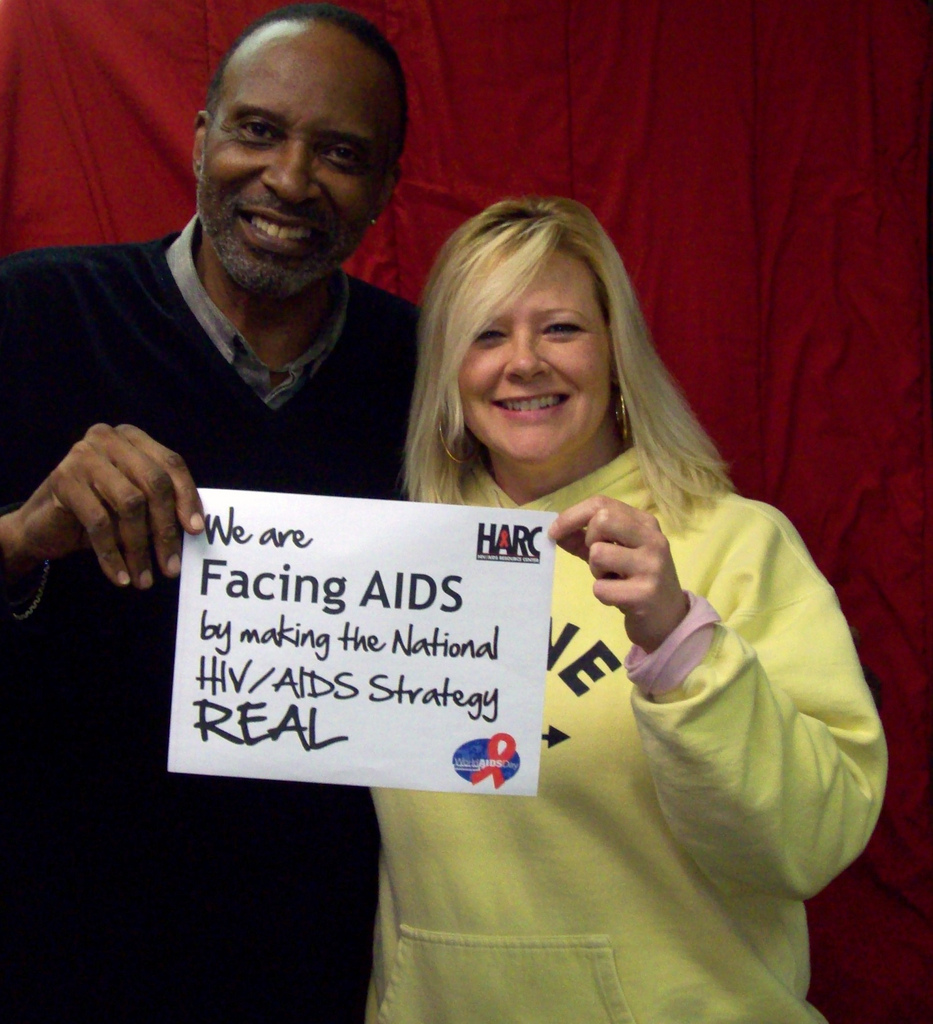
We are Facing AIDS through NHAS-22